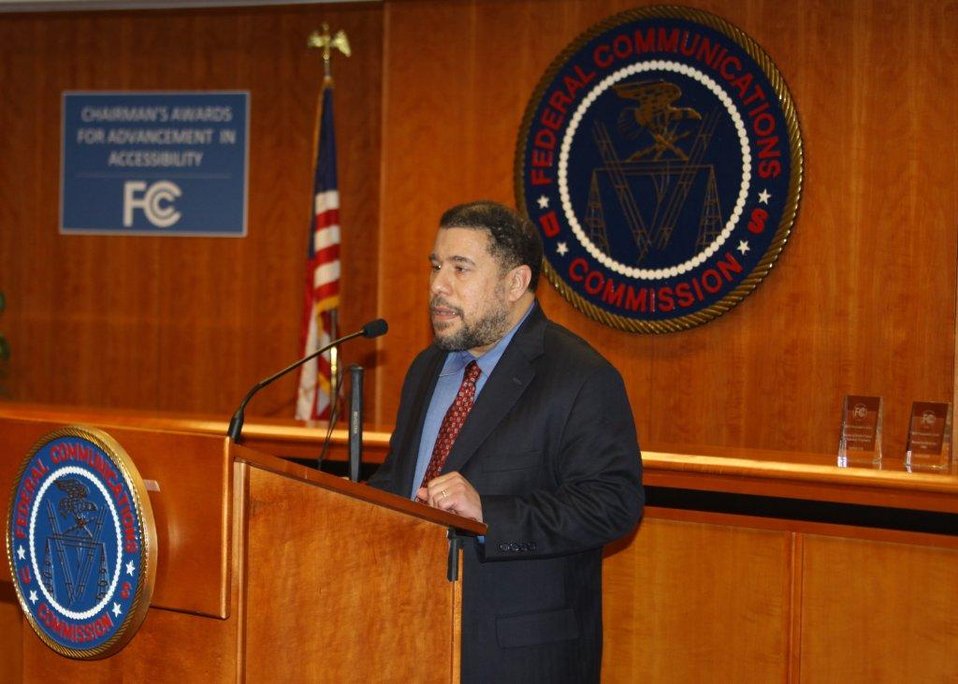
Jamal Mazrui, Deputy Director, Accessibility and Innovation Initiative